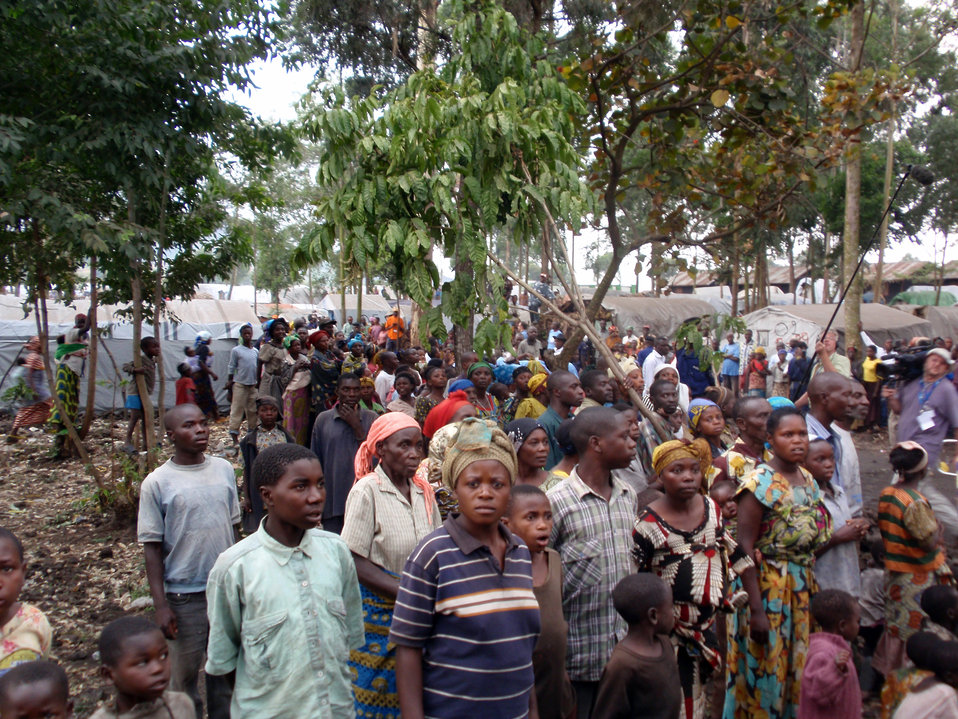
Behind the Scenes: Mugunga IDP Camp

The scene during the arrival of U.S. Secretary of State Hillary Rodham Clinton at the Mugunga Internally Displaced Person (IDP) Camp in Goma, Democratic Republic of Congo August 11, 2009.